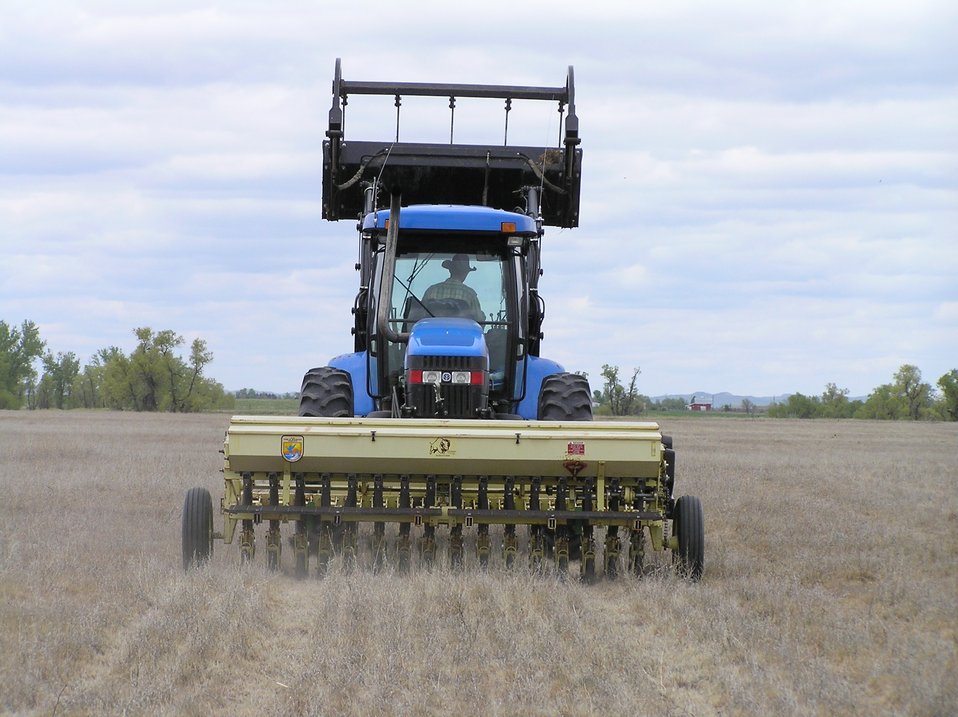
Upland Reseeding

Contractors work closely with Partners for Fish and Wildlife biologists to plant native grasses, which support Federal trust species.

Projects like this are funded by the U.S. Fish and Wildlife Service’s Partners for Fish and Wildlife program, whose habitat restoration projects are extraordinary engines for the U.S. economy. Restoration Returns: The Contribution of Partners for Fish and Wildlife Program and Coastal Program Projects to Local U.S. Economies finds that, in working directly with partners to implement vital on-the-ground habitat restoration, Service programs created more than 3,900 jobs in Fiscal Year 2011, generating a total economic stimulus of $327.6 million.

The “restoration economy” is a subset of green jobs that includes such industries as heavy equipment providers and operators, plant nurseries, landscape architects, and construction companies, among other firms.

Download the entire report at: www.fws.gov/home/restoration returns.html.